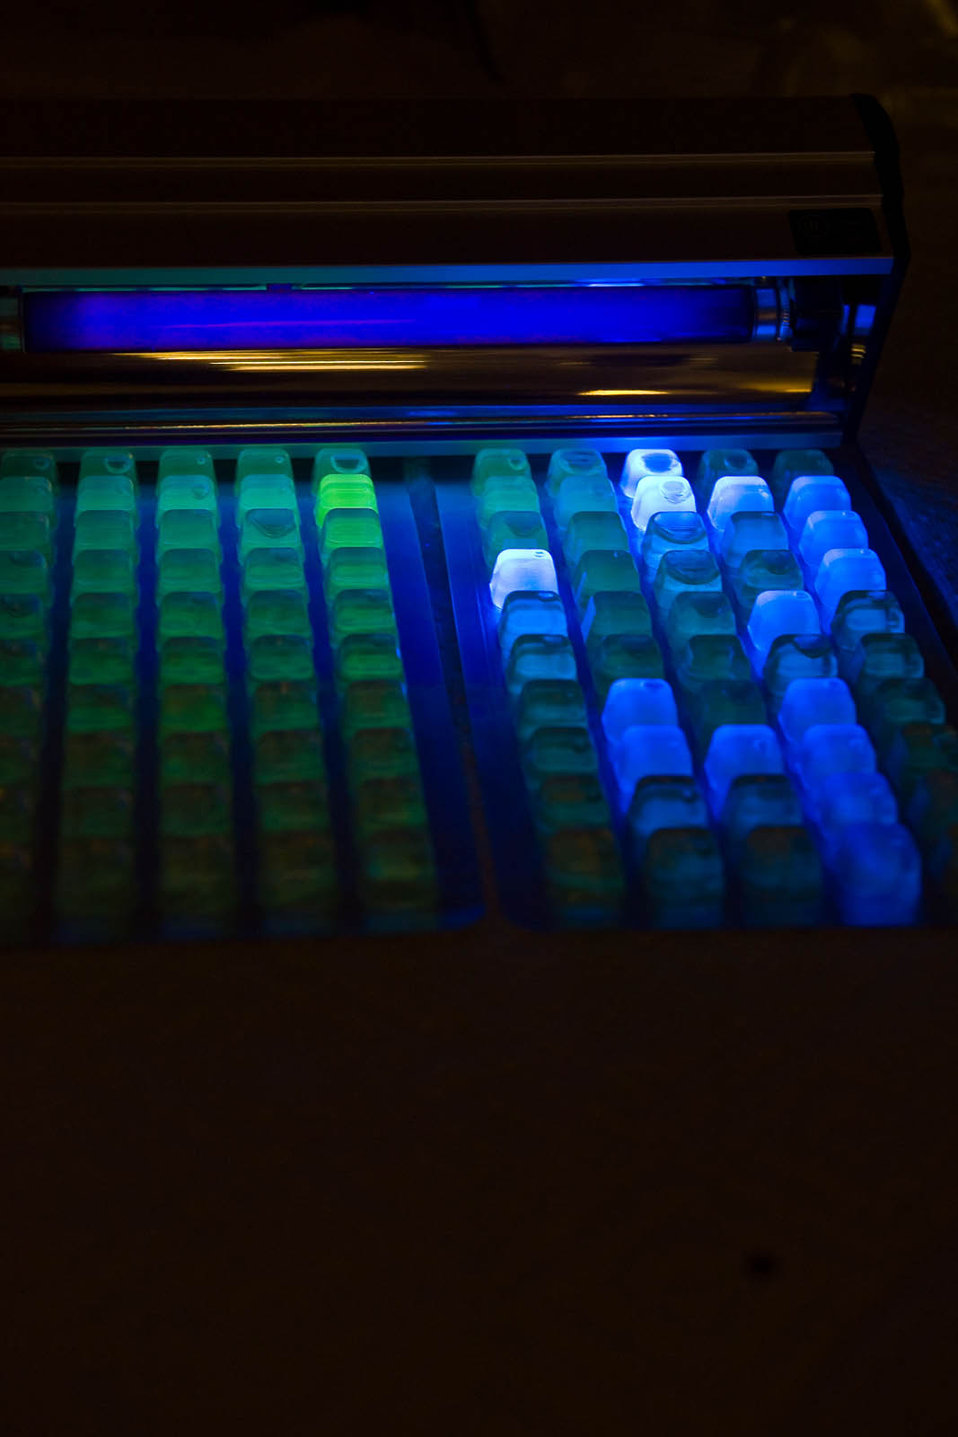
Presence of bacteria

Cells glow under ultra violet light when Enterococci bacteria is present.